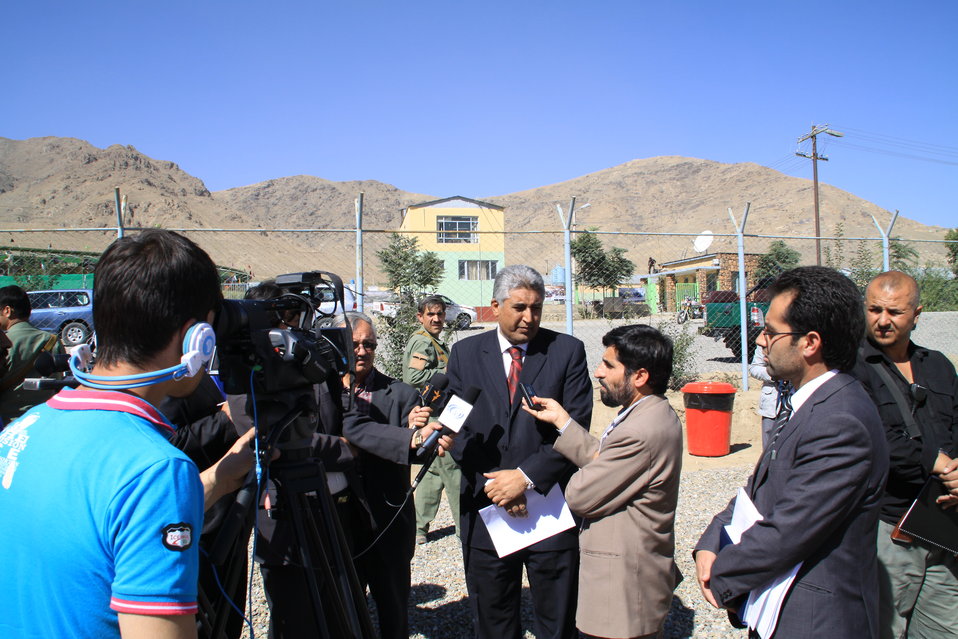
AVIPA Plus Wheat Seed Distribution 101005

US Ambassador Karl Eikenberry and USAID Acting Mission Director Kevin Brownawell joined the Minister of Agriculture, Irrigation and Livestock, H.E. Minister Mohammed Rahimi in signing a Memorandum of Understanding and distributing vouchers to area farmers for wheat and fertilizer.

US Ambassador Karl Eikenberry and USAID Acting Mission Director Kevin Brownawell joined the Minister of Agriculture, Irrigation and Livestock, H.E. Minister Mohammed Rahimi in signing a Memorandum of Understanding and distributing vouchers to area farmers for wheat and fertilizer.

US Ambassador Karl Eikenberry and USAID Acting Mission Director Kevin Brownawell joined the Minister of Agriculture, Irrigation and Livestock, H.E. Minister Mohammed Rahimi in signing a Memorandum of Understanding and distributing vouchers to area farmers for wheat and fertilizer.